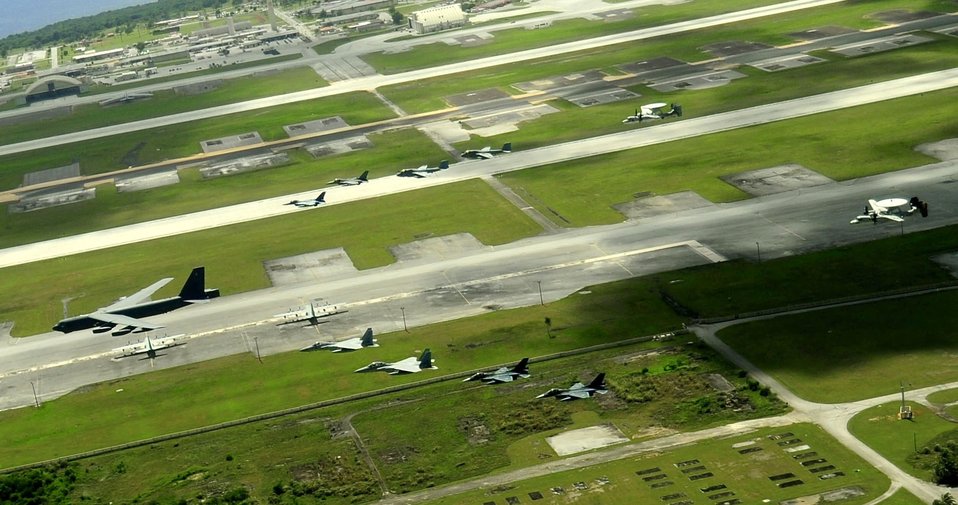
Airmen participate in exercise Cope North

A formation of aircraft flies over Guam Feb. 21, 2011, during exercise Cope North.